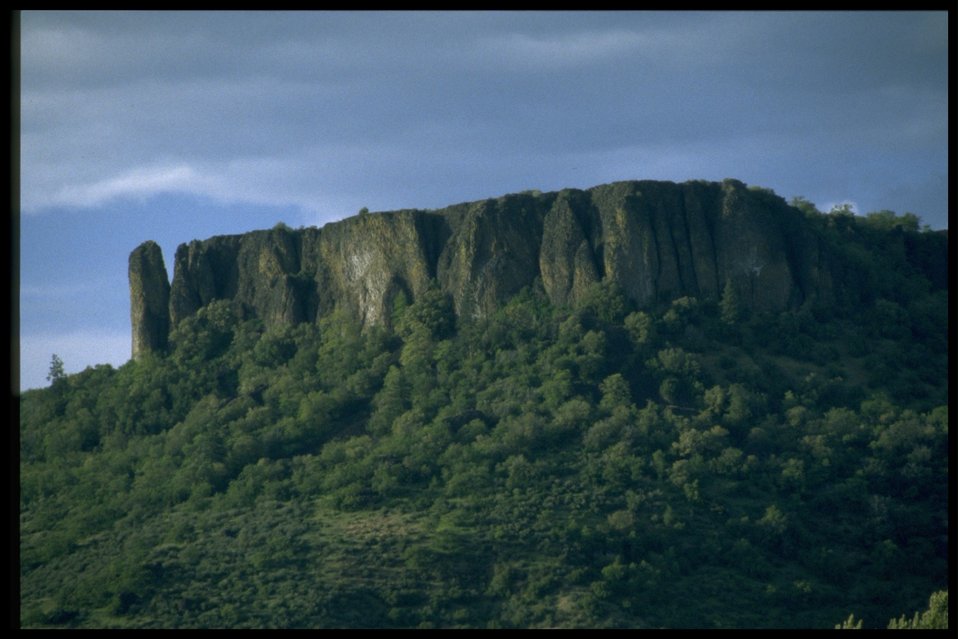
Scenic view of Lower Table Rock.